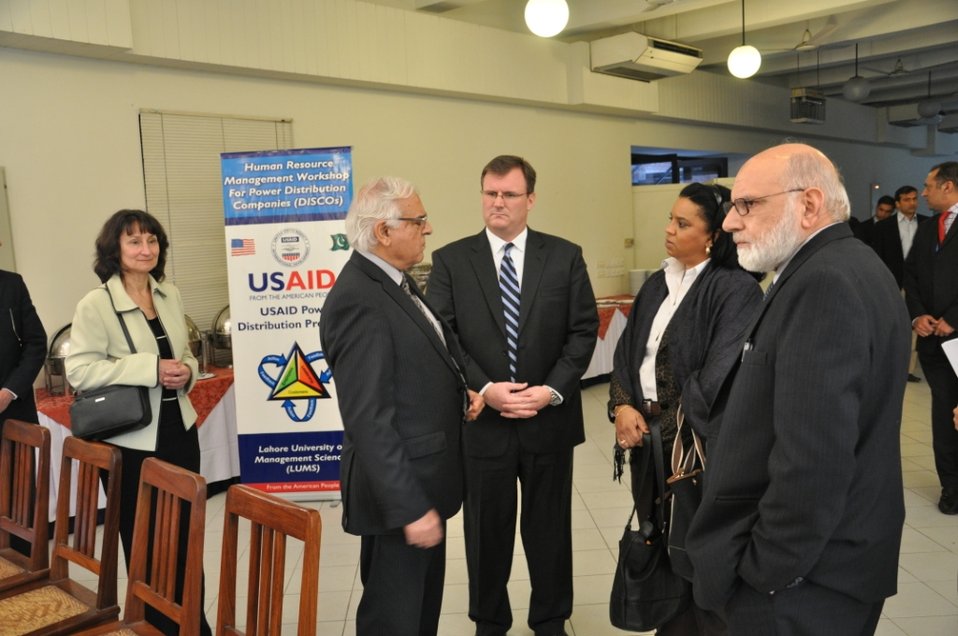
HR Workshop at LUMS

Lahore, January 15, 2012 - The USAID Power Distribution Program’s Chief of Party, Craig VanDevelde along with the USAID Power Distribution Program’s HR team lead, Tahir Ali Khan, briefing Ms. Gail Spence about the significance of Human Resource workshop.